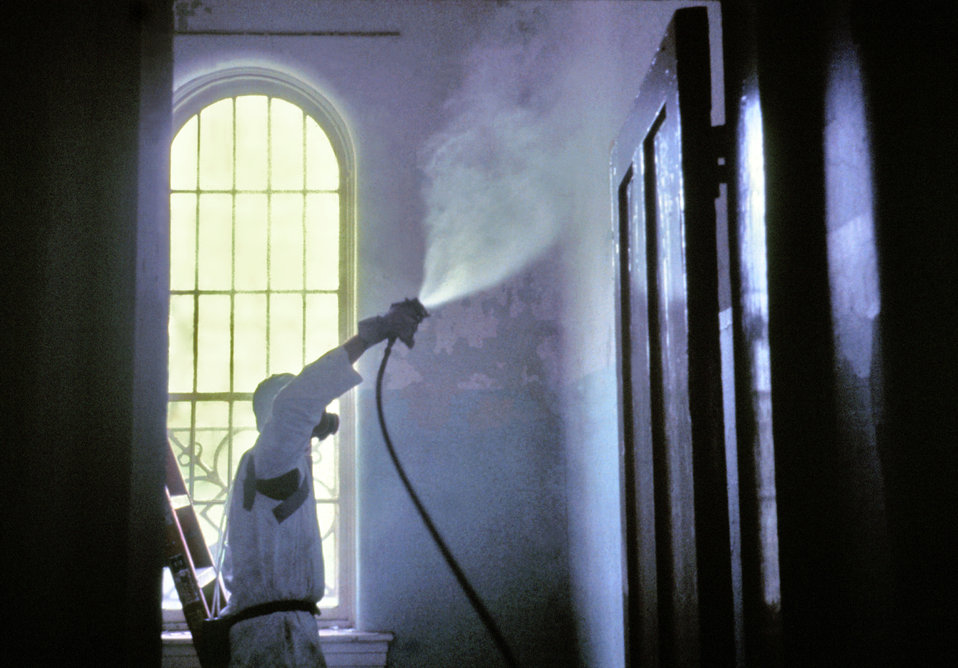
This photograph depicted a worker wearing a protective mask and suit while preparing a surface for wet scraping by first saturating it with water during a lead-based paint cleanup pilot project.